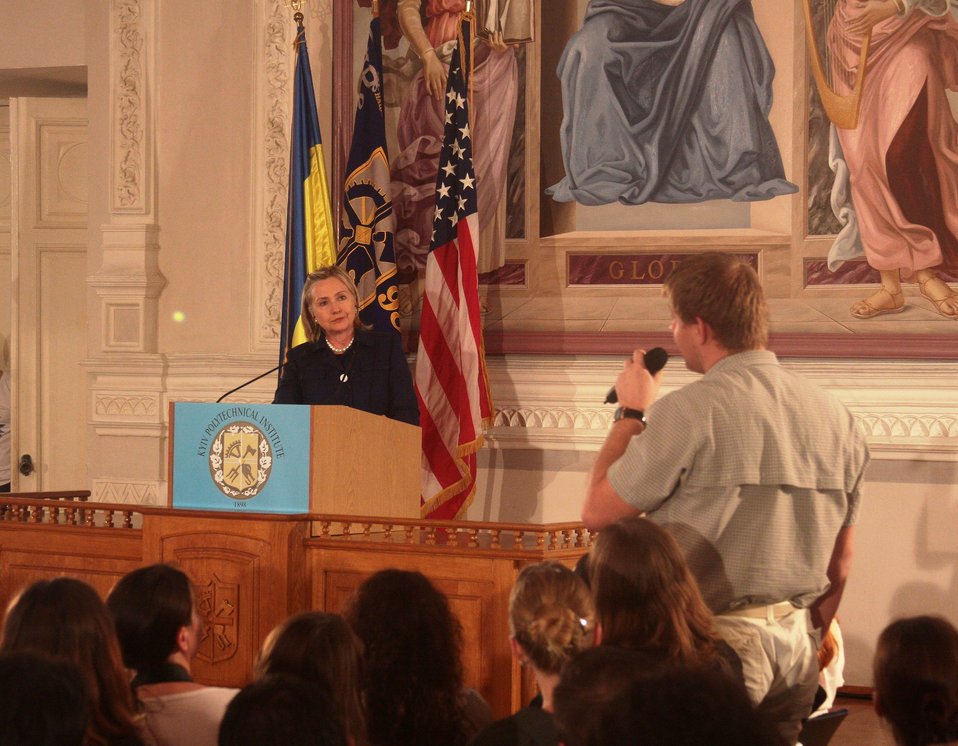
Secretary Clinton Addresses Kyiv Polytechnic Institute Town Hall

U.S. Secretary of State Hillary Rodham Clinton responds to students’ questions at Kyiv Polytechnic Institute in Kyiv, Ukraine, on July 2, 2010.